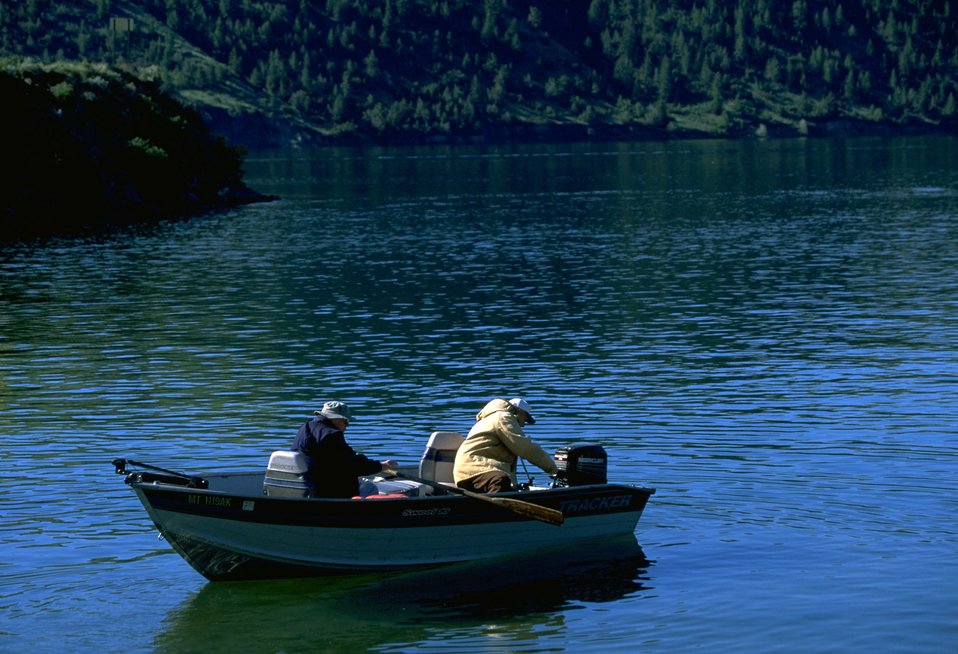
Fishermen in boat on Holter Lake